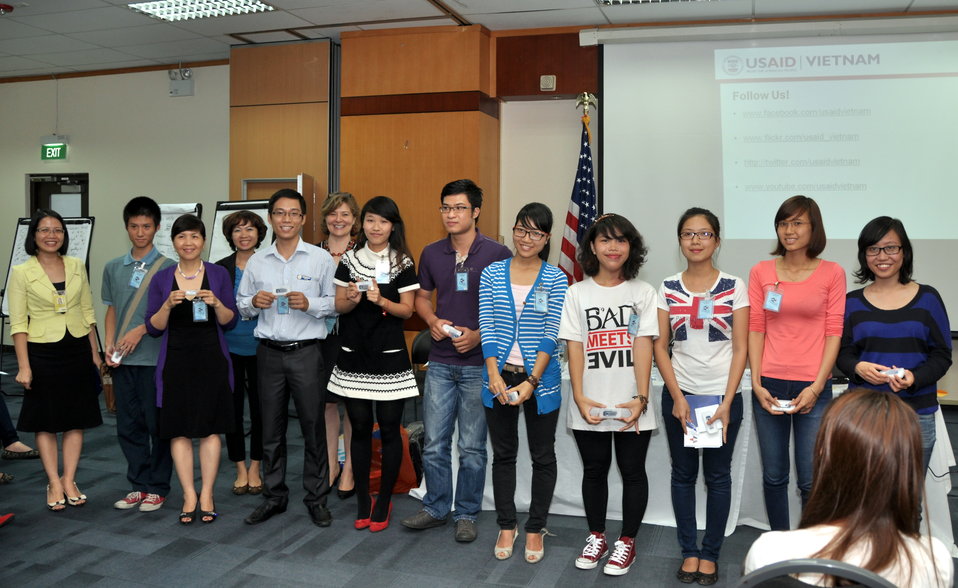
Students join the ‘USAID and Higher Education in Vietnam’ talk

Photo: @USAIDVietnam, November 19, 2012